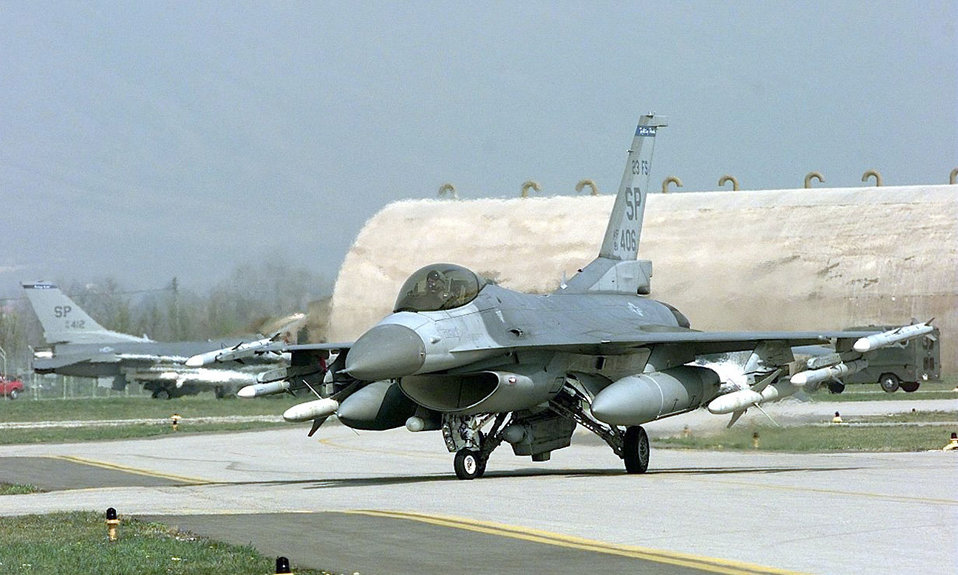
Falcon returns

AVIANO AIR BASE, Italy -- An F-16C Fighting Falcon of the 52nd Fighter Wing returns from flying a mission against targets in Yugoslavia, April 2, 1999. Members of the 52nd from Spangdahlem Air Base, Germany, are deployed here to support NATO Operation Allied Force.